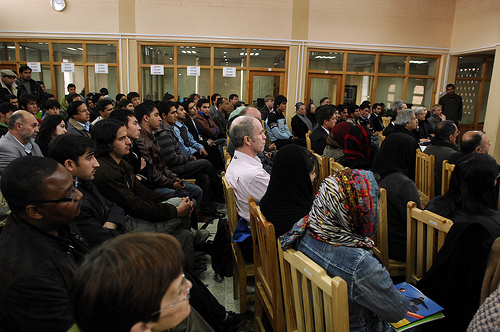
QandA with Students at the American University of Afghanistan

Deputy Secretary Wolin participated in a Q&A with a group of students at the American University of Afghanistan on Wednesday, February 10.